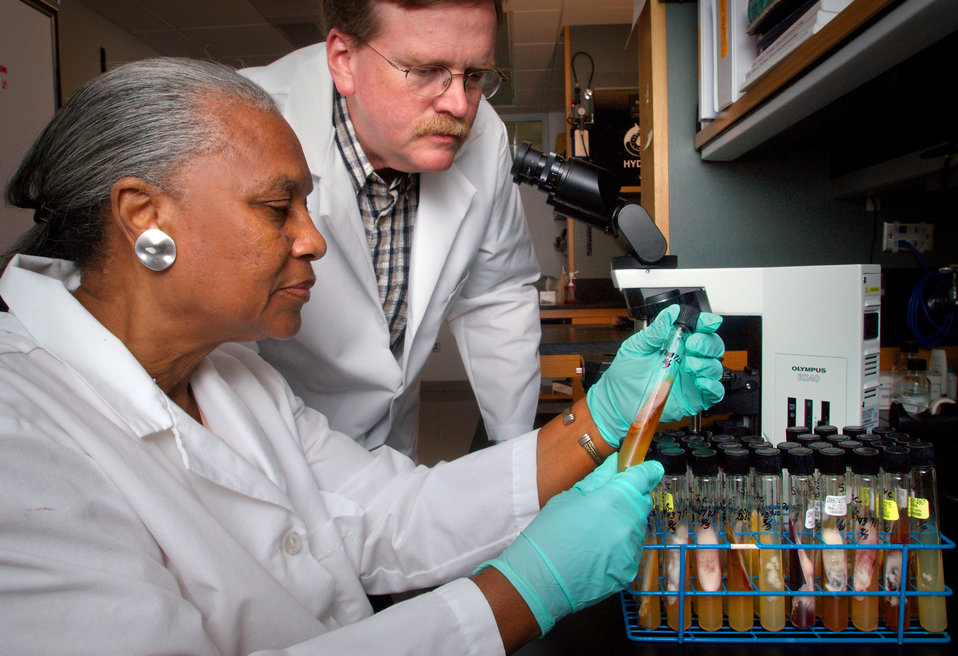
This photograph depicted Center of Disease Control's Dr. Mark Lindsley, and laboratory technician, Shirley McClinton as they were examining test tubes containing Fusarium-isolate subcultures, which had been received from an outbreak in patients with ocular keratitis. The mould was isolated using Potato Dextrose Agar, which had been incubated at 26�C for 5 - 7 days. This isolate was identified as a mould from the Fusarium oxysporum species complex.